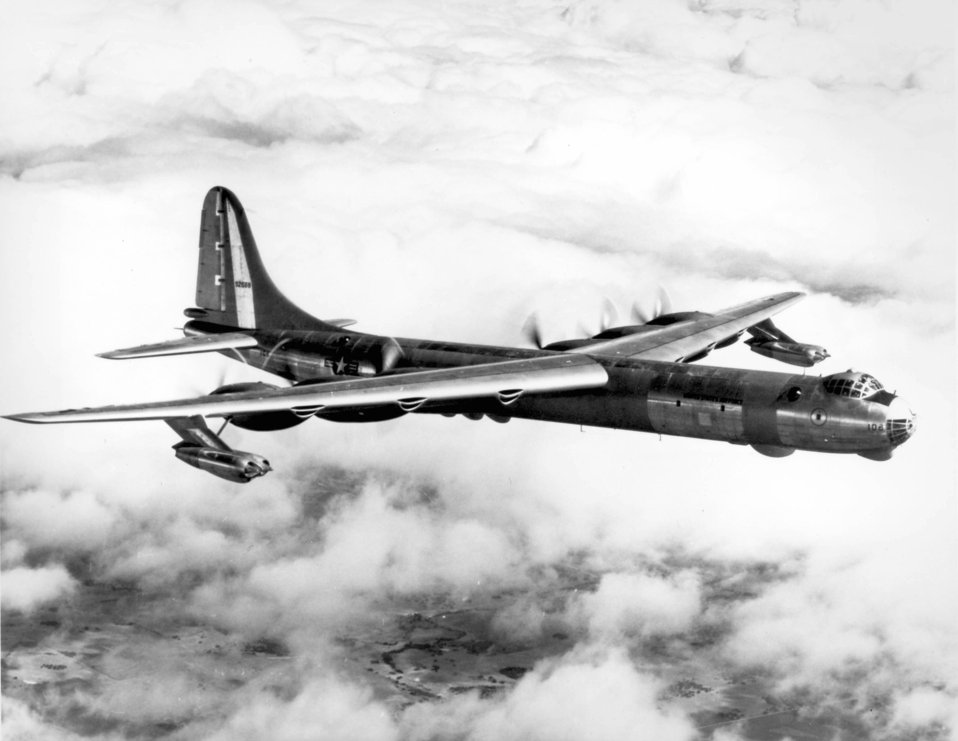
Convair RB-36D

1940's -- The Convair RB-36D, the jet-augumented version of the U.S. Air Force's intercontinental strategic bomber. Bomb bay was fitted with 14 cameras. The number 2 bay was used to carry up to eighty 100 lb. photo flash bombs for nighttime aerial photography. Four General Electric J-47 jet engines, mounted in pairs under outer wing edges, supplement six Pratt & Whitney piston engines.